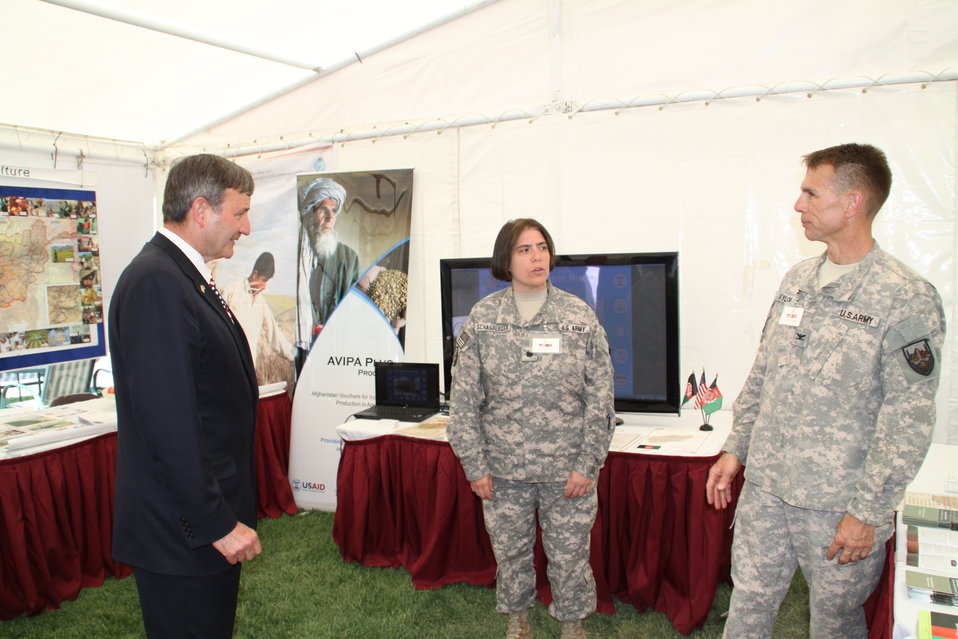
Kabul Official July 4th Celebration